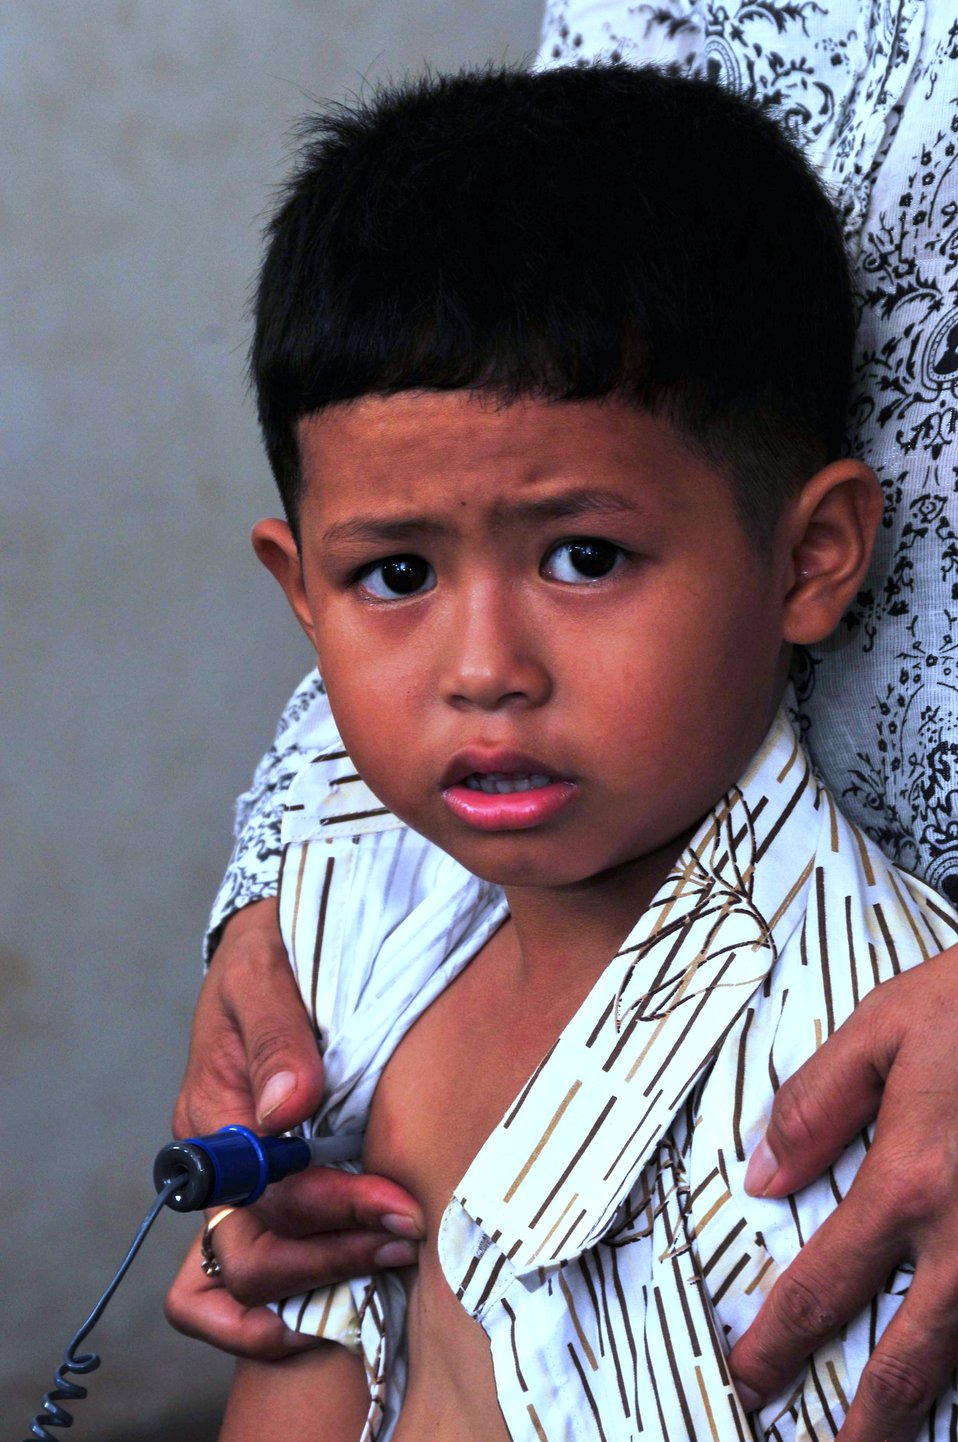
Doctors Take A Young Cambodian Patient’s Temperature

A young Cambodian patient stands quietly while doctors take his temperature during a medical civic action program in support of Pacific Partnership 2010 on June 24, 2010, in Sihanoukville, Cambodia. The Military Sealift Command hospital ship USNS Mercy (T-AH 19) is in Cambodia conducting the fifth in a series of annual U.S. Pacific Fleet humanitarian and civic assistance endeavors to strengthen regional partnerships.